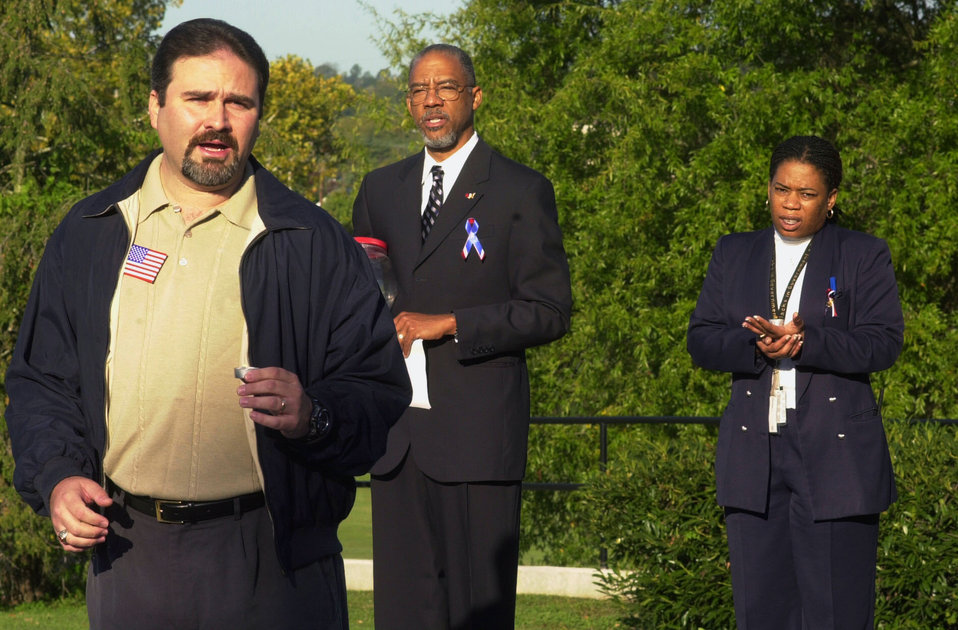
Flag Pole Pray after 911 Federal Building

01-249-2303 DOE photo by Lynn Freeny
Oak Ridge Tennessee 10/2/2001